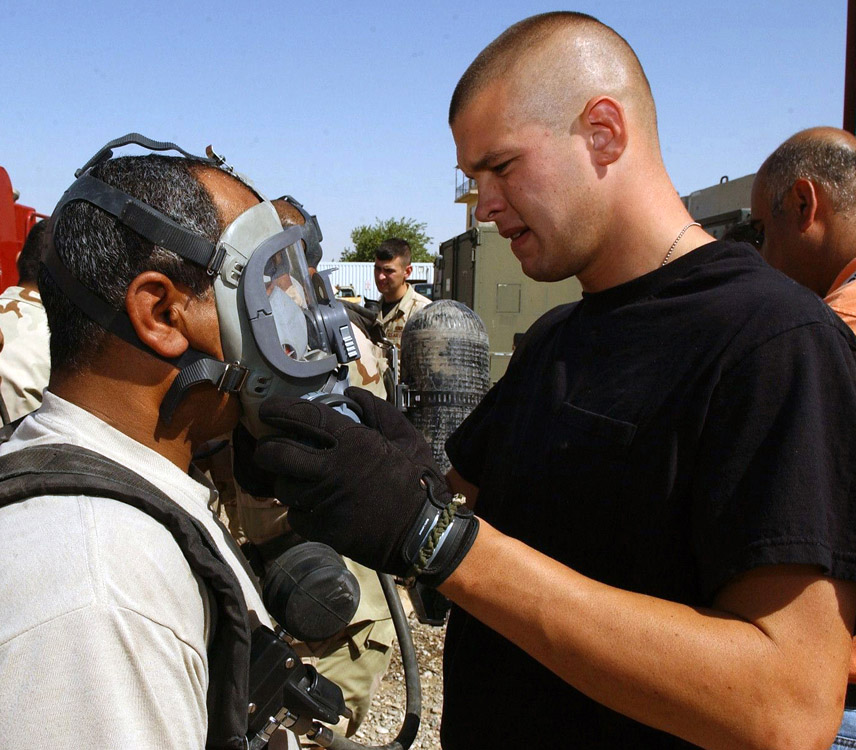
U.S. Airmen teach Iraqi volunteers to battle blazes

Senior Airman Bradley Hillebrand checks an Iraqi firefighter's face mask for a proper seal during training at Kirkuk Air Base, Iraq. Air Force firefighters are training Iraqi Air Force volunteer firefighters on the principles of firefighting and using protective gear. Airman Hillebrand is with the 506th Expeditionary Civil Engineer Squadron fire department.